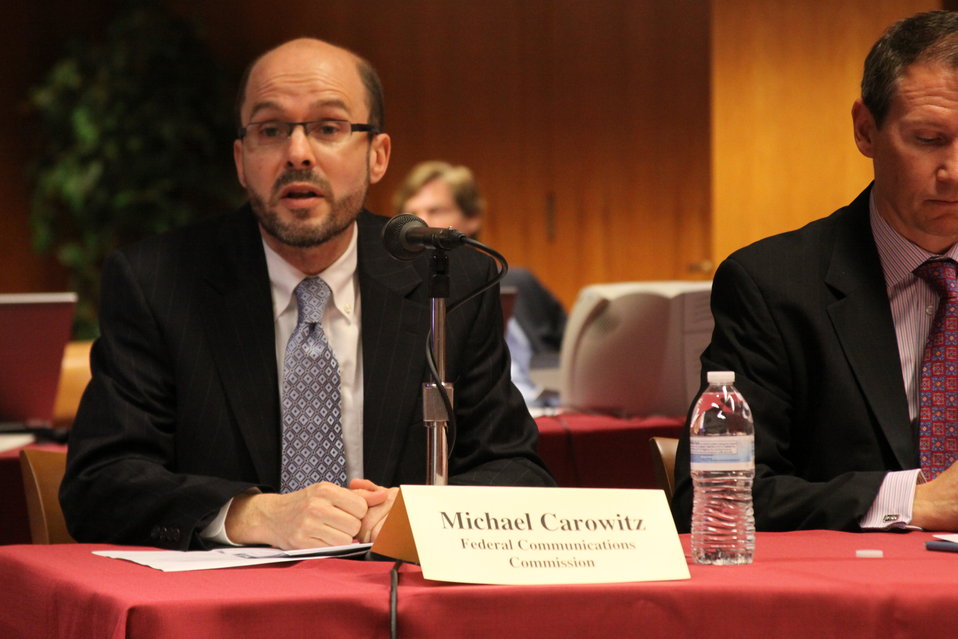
April 17, 2013 Bill Shock and Cramming Workshop - Michael Carowitz, Acting Deputy Chief, Consumer and Governmental Affairs Bureau, Federal Communications Commission